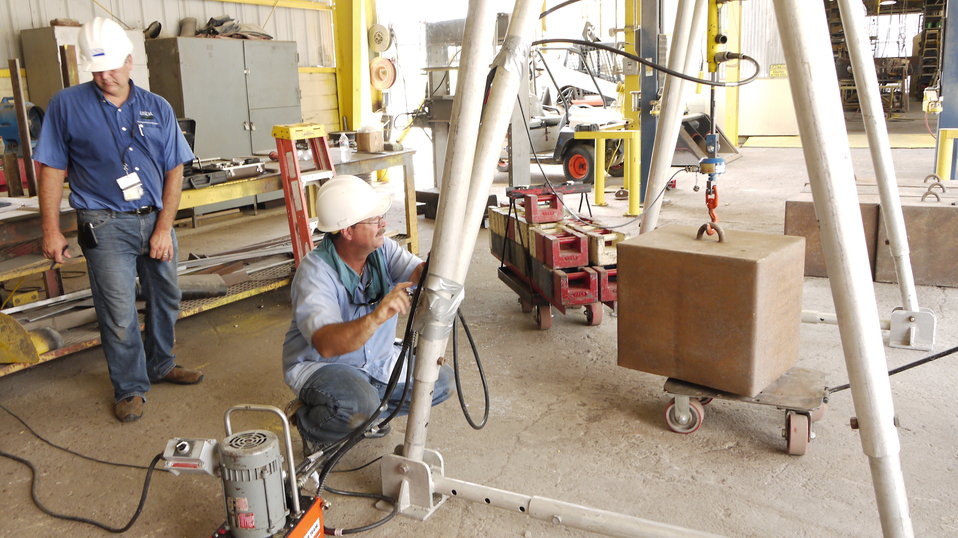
U.S. Department of Agriculture’s (USDA) Grain Inspection, Packers, and Stockyard Administration (GIPSA) industrial specialists Troy Kramer and Gerald Raymond raises an elevator owned test weight to obtain a weight value that will be compared against the USDA GIPSA test weight standard group to see if it needs adjustment. USDA GIPSA provides official testing of Automatic Bulk Weighing (Hopper) scales used in official certification of grain weight.